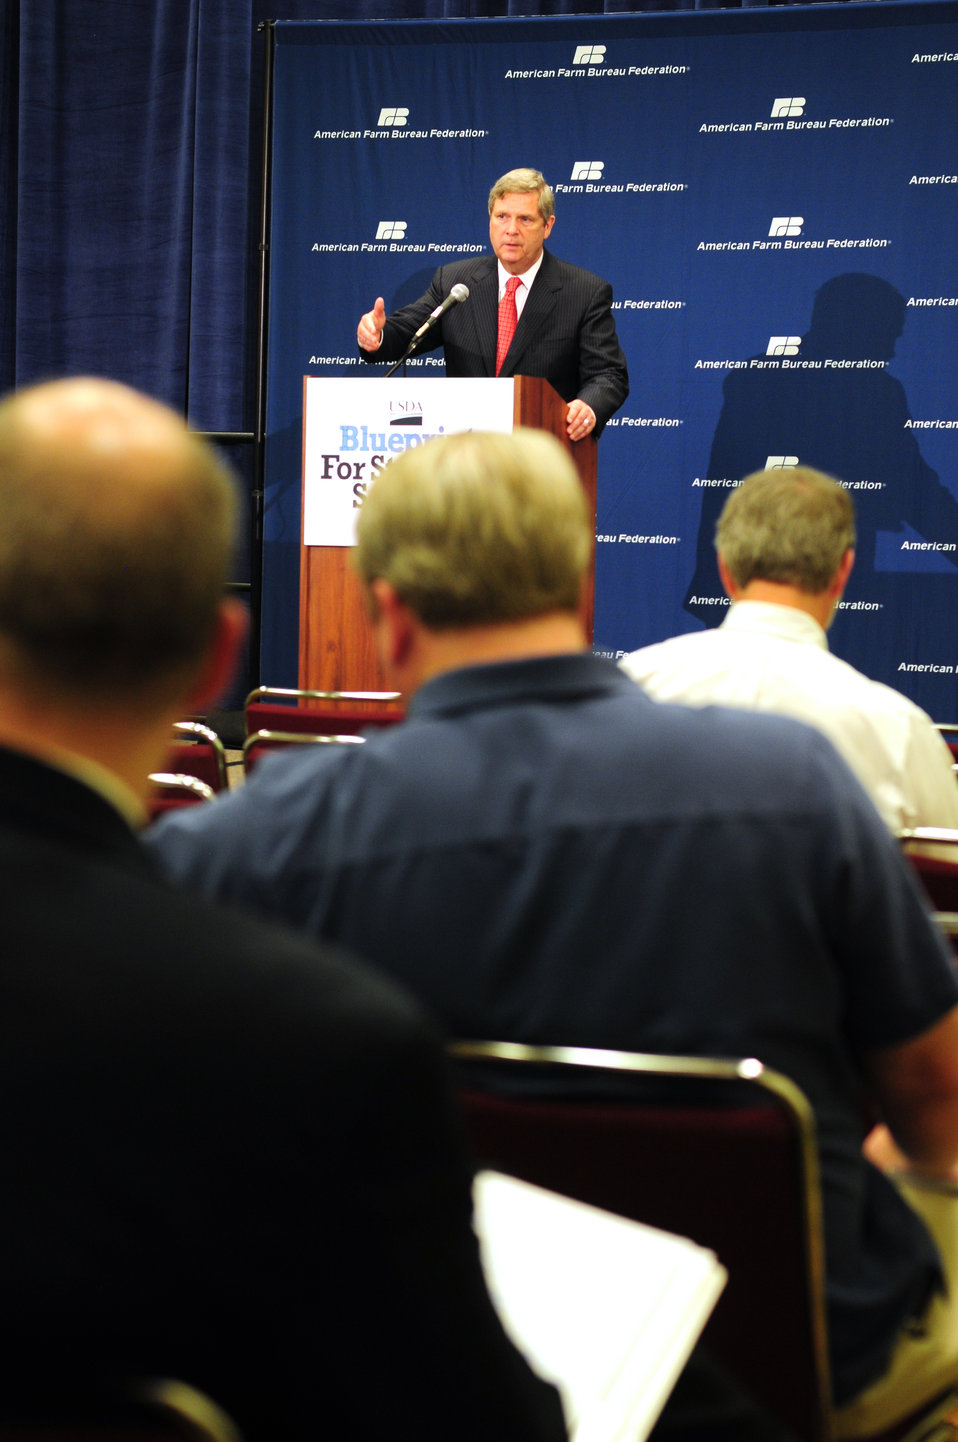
Agriculture Secretary Tom Vilsack presents USDA's Blueprint for Stronger Service, a plan to Increase Efficiency in USDA Operations, on Monday, January 9, 2012 in Honolulu, Hawaii.